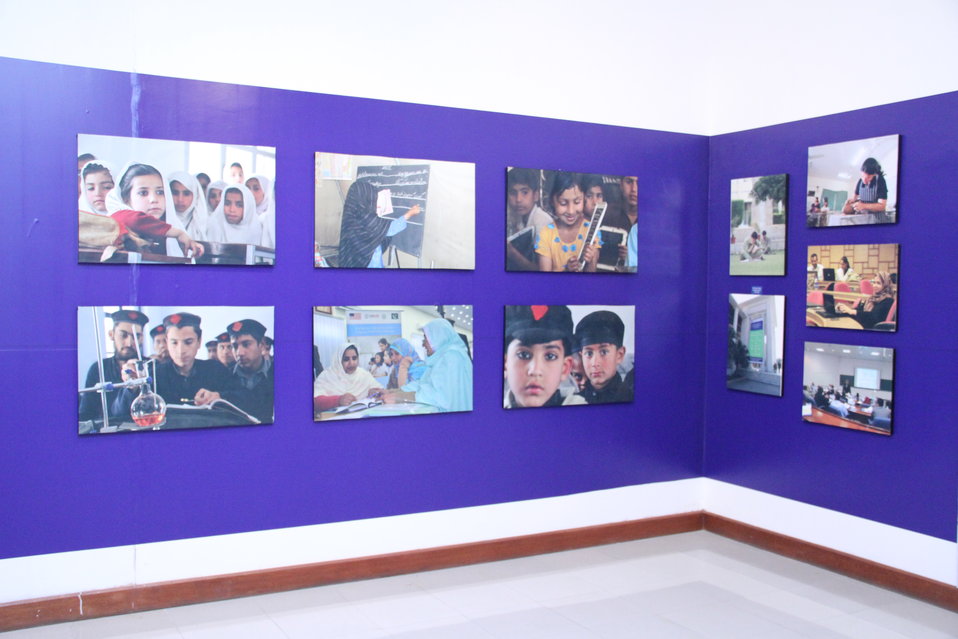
Photo Exhibition Celebrate US-PAK Cooperation at PNCA, Islamabad on April 13, 2012